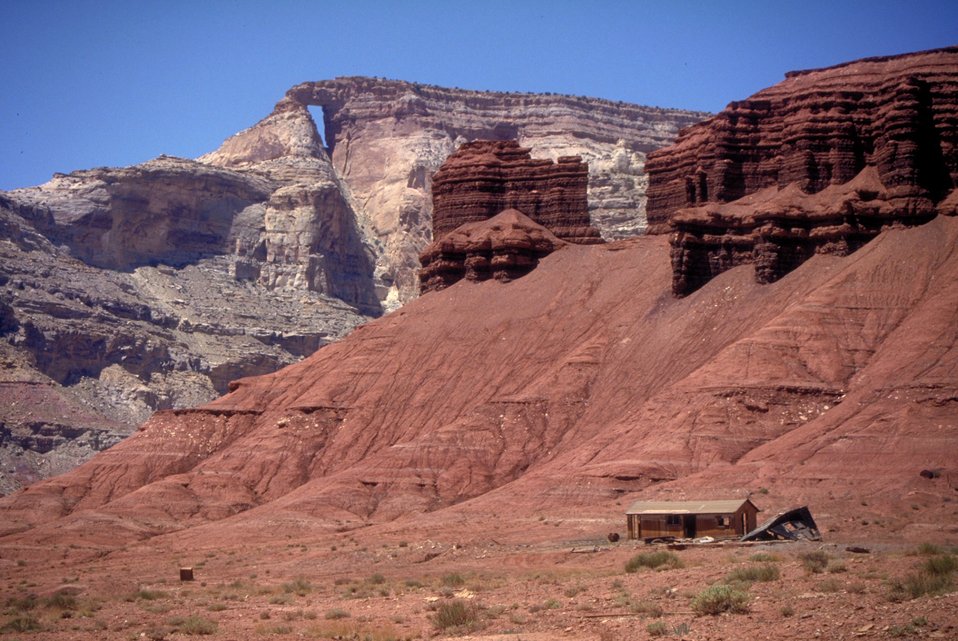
Hondo Arch along the Red Canyon Loop, San Rafael Swell.